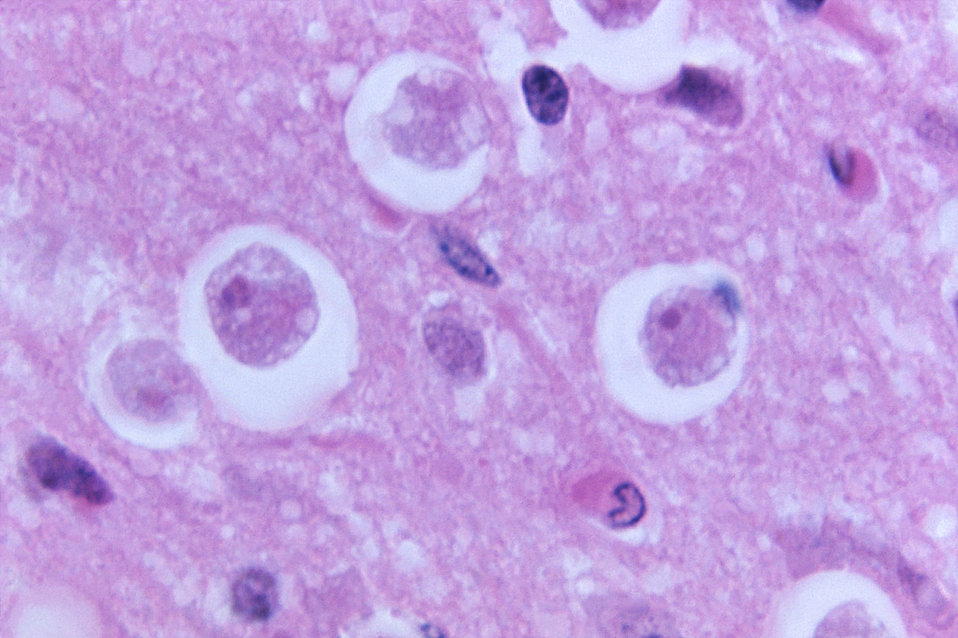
Magnified 1180X, this 1973 H&E-stained photomicrograph revealed the cytoarchitectural histpathology found in a case of primary amoebic meningoencephalitis (PAM), due to the presence of free-living, Naegleria gruberi, amoebae. Free-living amoebae belonging to the genera Acanthamoeba, Balamuthia, and Naegleria, are important causes of disease in humans and animals.What is Naegleria?